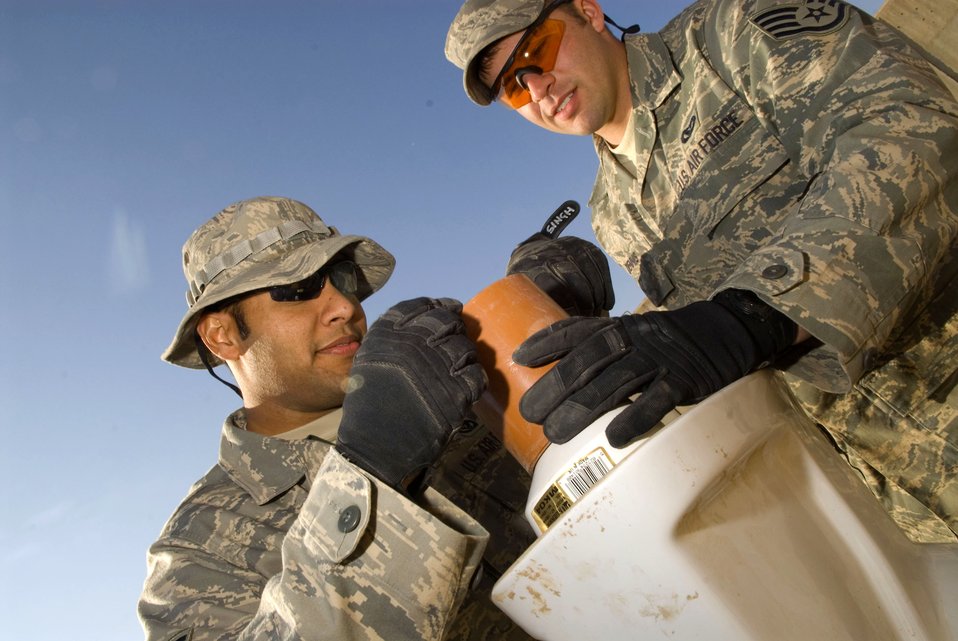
Fixing the 'hole' thing

Staff Sgts. Pranay Singh and Caleb Dennis, , connect a seal to a toilet Jan. 15 at Balad Air Base, Iraq. The seal prevents water from leaking out of the drain pipes. Sergeants Singh and Dennis, both 732nd Expeditionary Civil Engineer Squadron utility technicians, are deployed from Kadena Air Base, Japan.